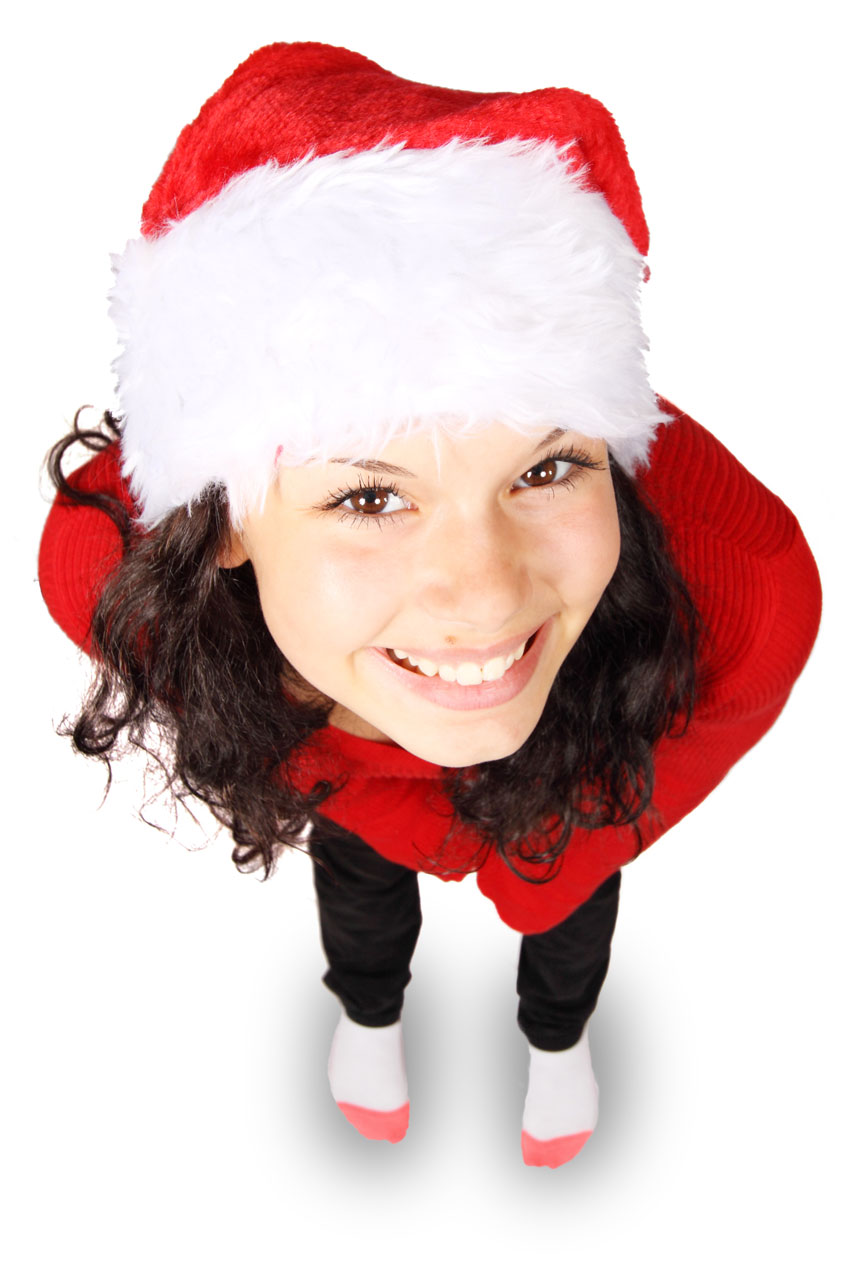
Cute santa claus

Pretty young woman dressed as santa.